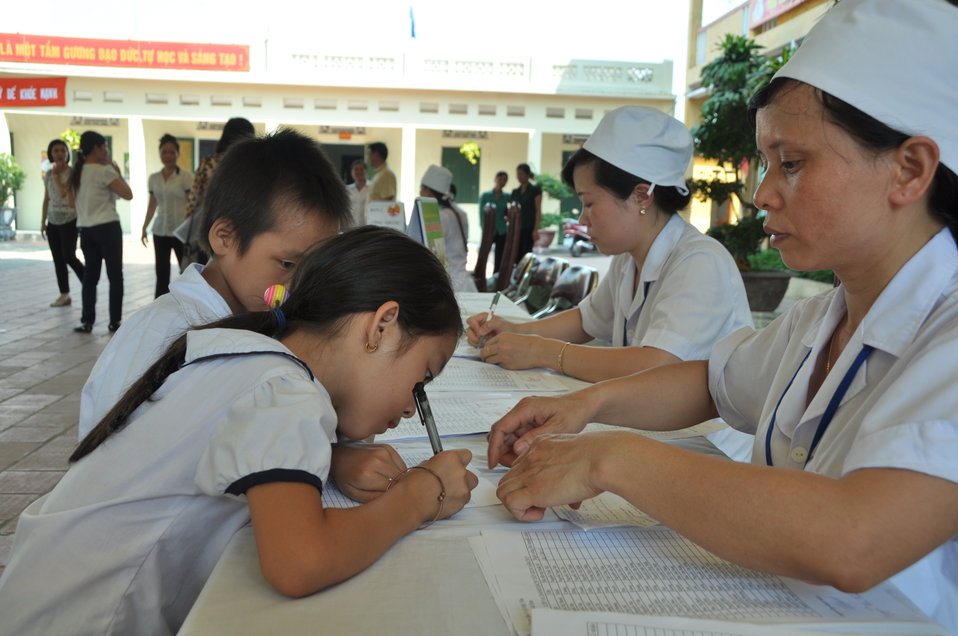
USAID supports deworming education and medication distribution in Bac Giang Province

May 20, 2013